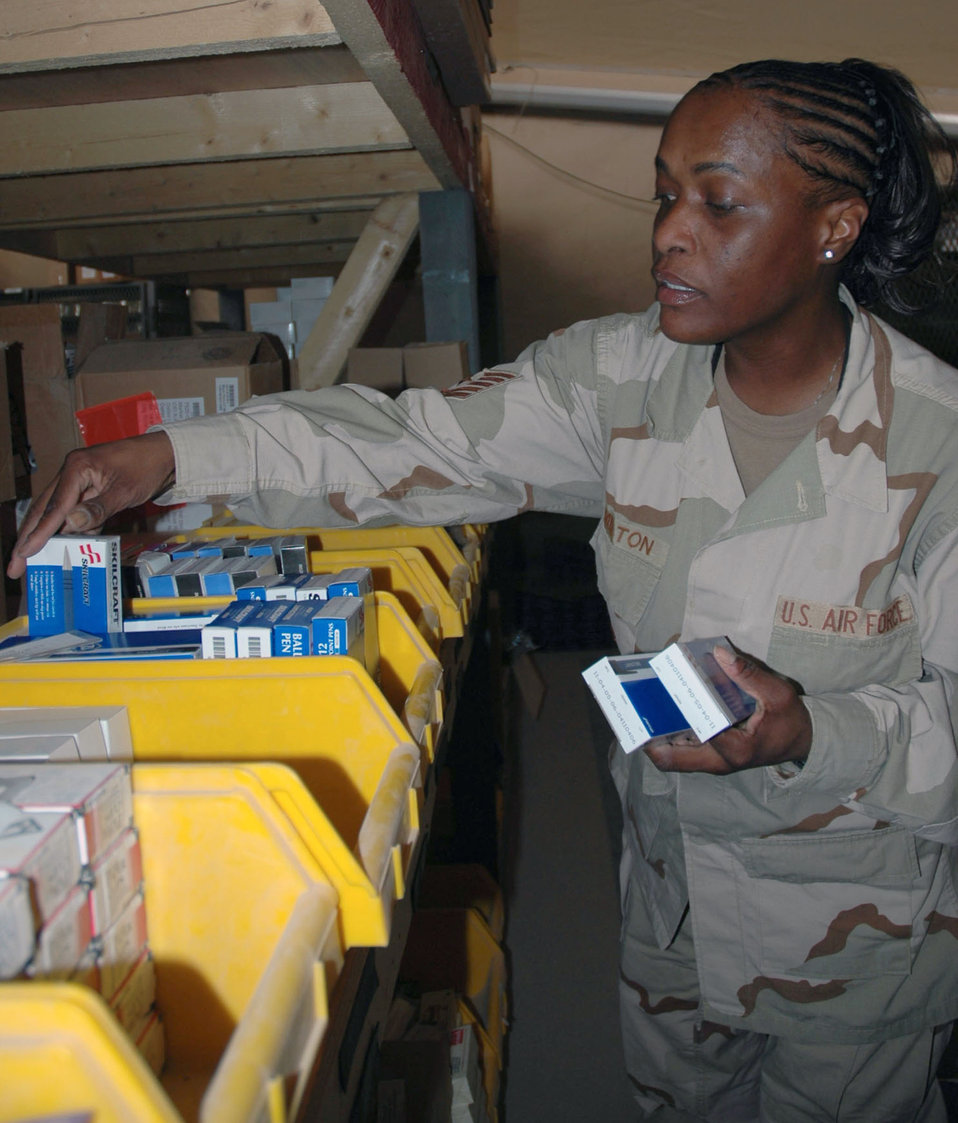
Logistics Airmen supply customers with team effort

BAGHDAD, Iraq -- Tech. Sgt. Tonya Hamilton keeps Airmen assigned to the 447th Air Expeditionary Wing fully stocked with essential office supplies and individual equipment items such as hats, gloves and uniform items. Sergeant Hamilton is the noncommissioned officer in charge of the base service supply store here and is deployed from Luke Air Force Base, Ariz.